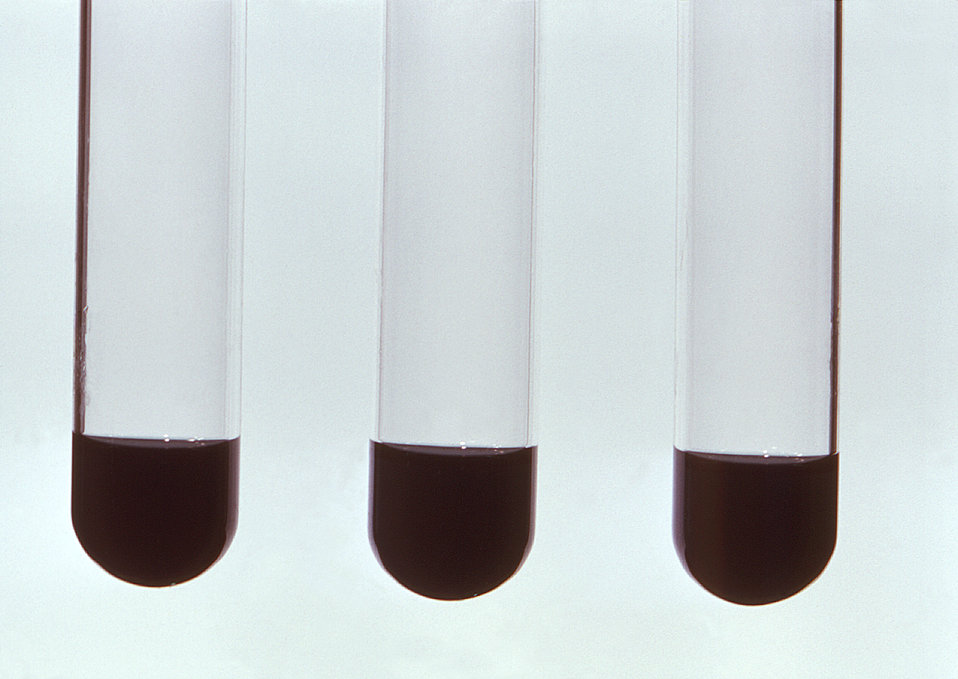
In the case of this amidase test for Nocardia asteroids, the results proved to be unreadable, due to the fact that the control resulted in a positive result as well. See PHIL 2970 for a readable positive result of this amidase test for Nocardia asteroids.